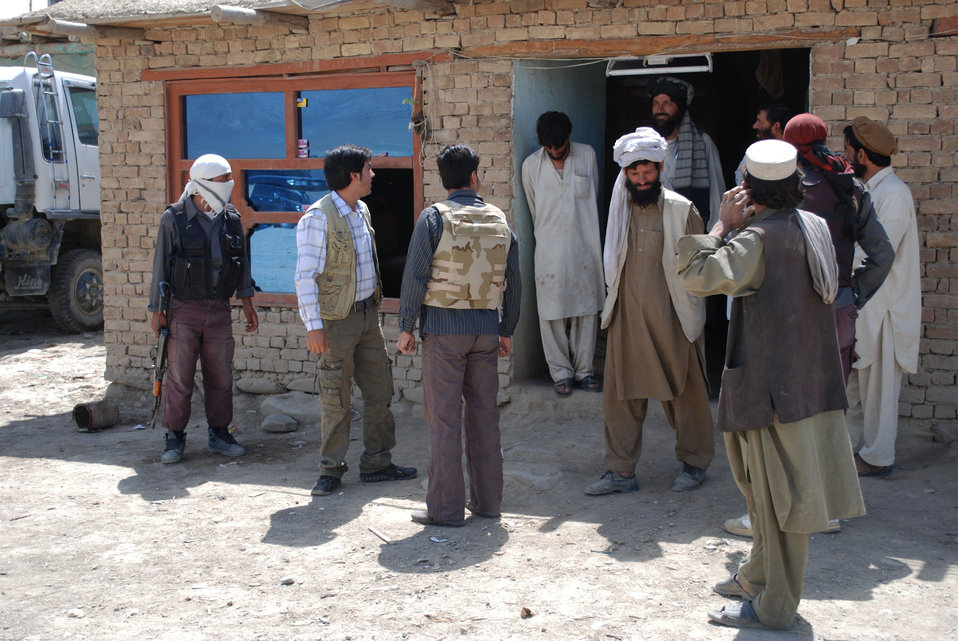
'On the Road' in Paktya Province